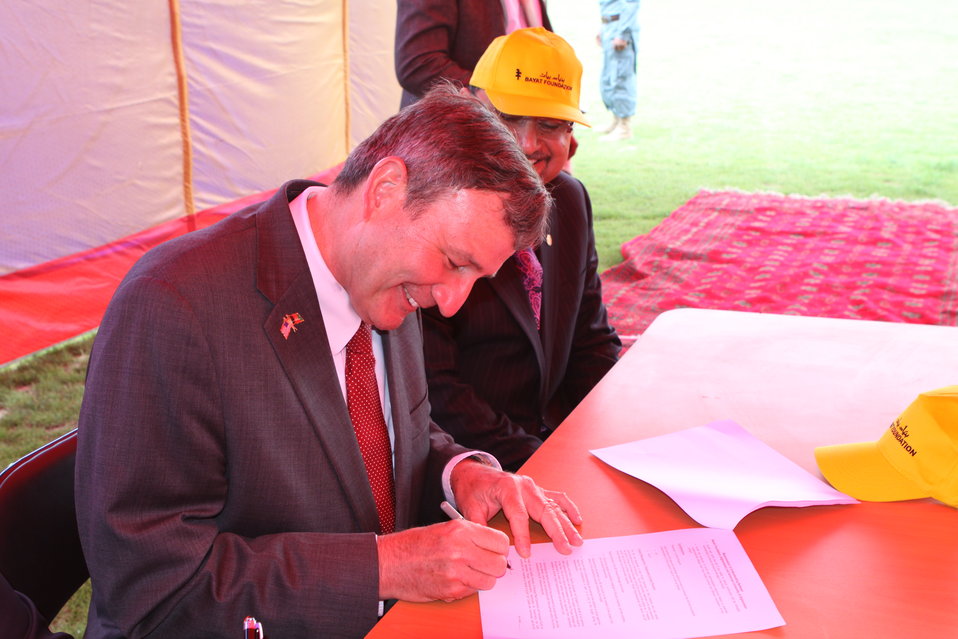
100526 AUAF Graduation 368